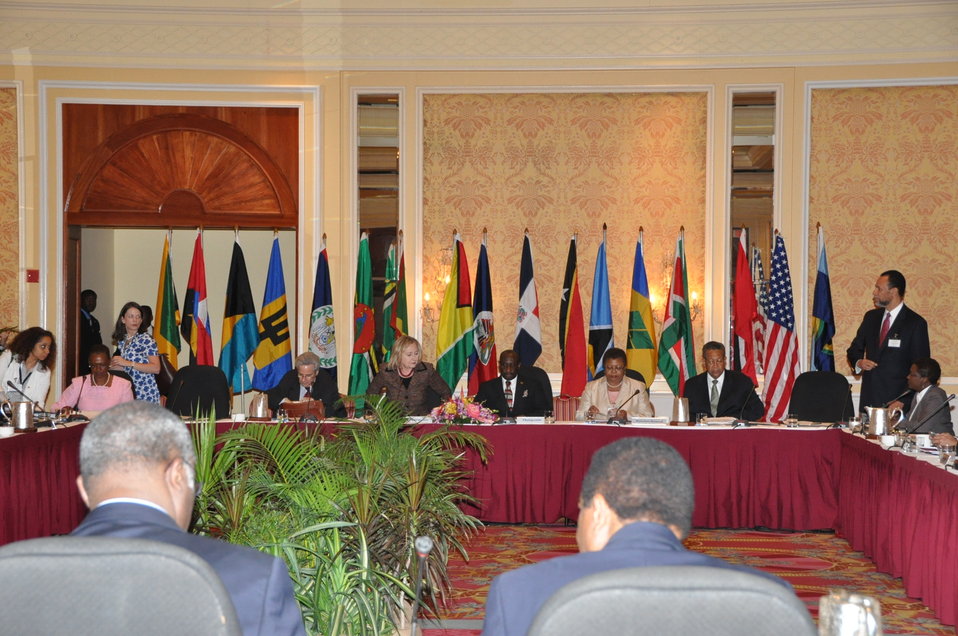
Secretary Clinton Co-Chairs a Meeting With CARICOM Ministers

U.S. Secretary of State Hillary Rodham Clinton co-chairs a meeting with the foreign ministers in the Caribbean Community (CARICOM), in Montego Bay, Jamaica, on June 22, 2011. Assistant Secretary of State for Western Hemisphere Affairs Arturo Valenzuela is seated to the Secretary's right.